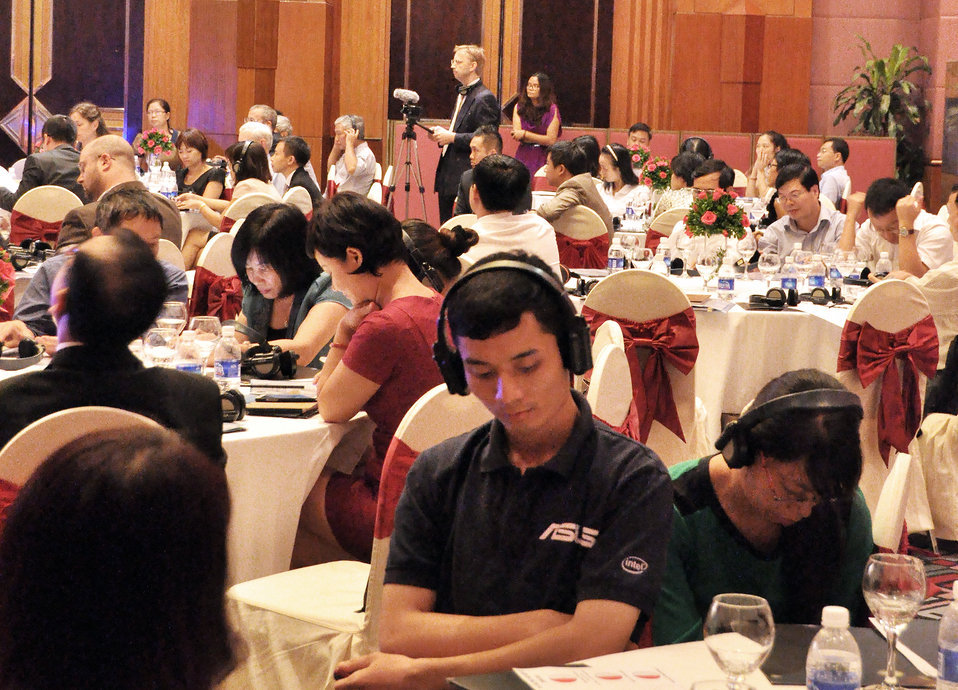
USAID's Support for Trade Acceleration Project (USAID STAR Plus) Closing Ceremony

Hanoi, August 26, 2013.